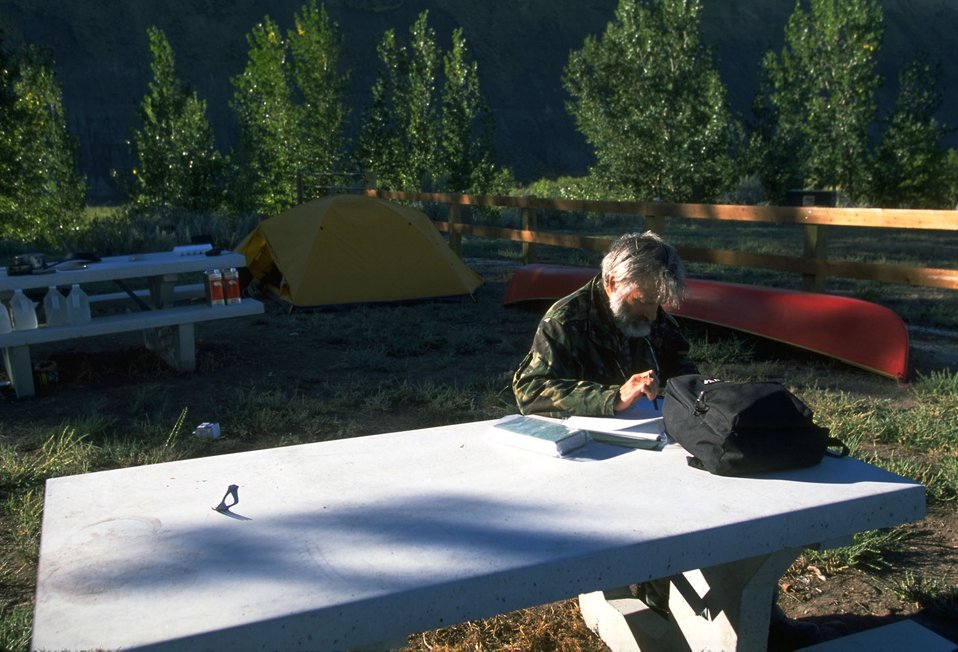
Canoe launch campgrounds at Fort Benton fairgrounds